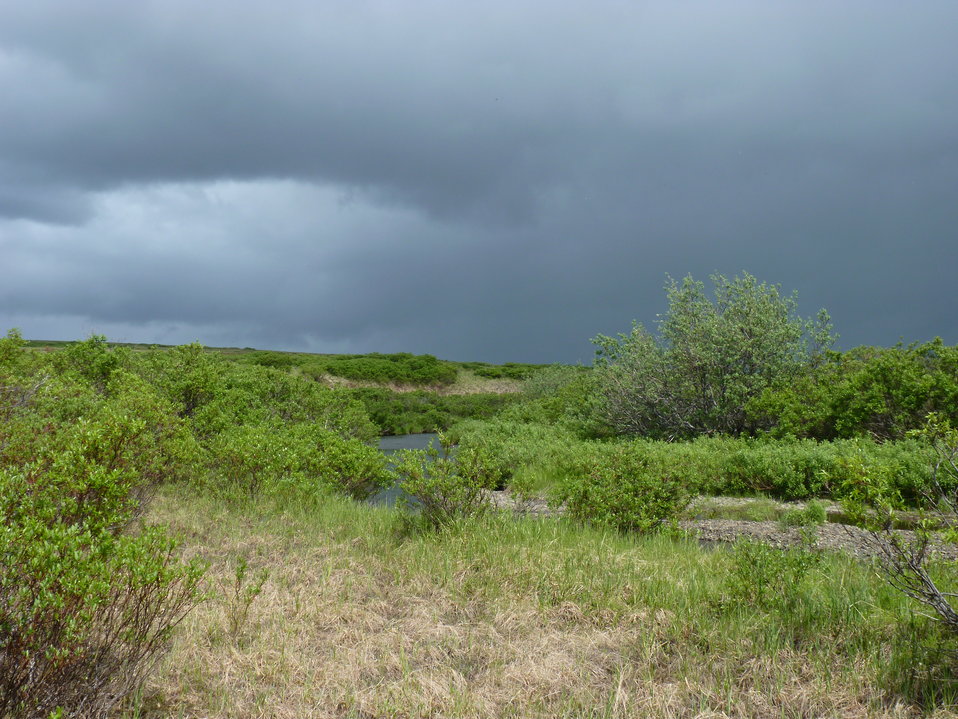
Andreafsky Wilderness, Yukon Delta National Wildlife Refuge